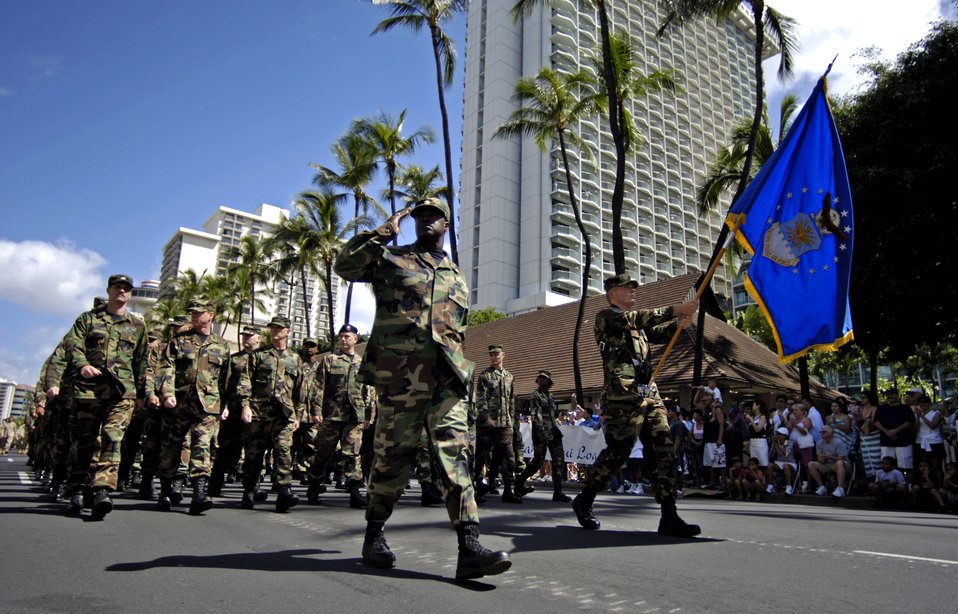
A salute to the troops

Airmen from Hickam Air Force Base, Hawaii, march past the review stand during the